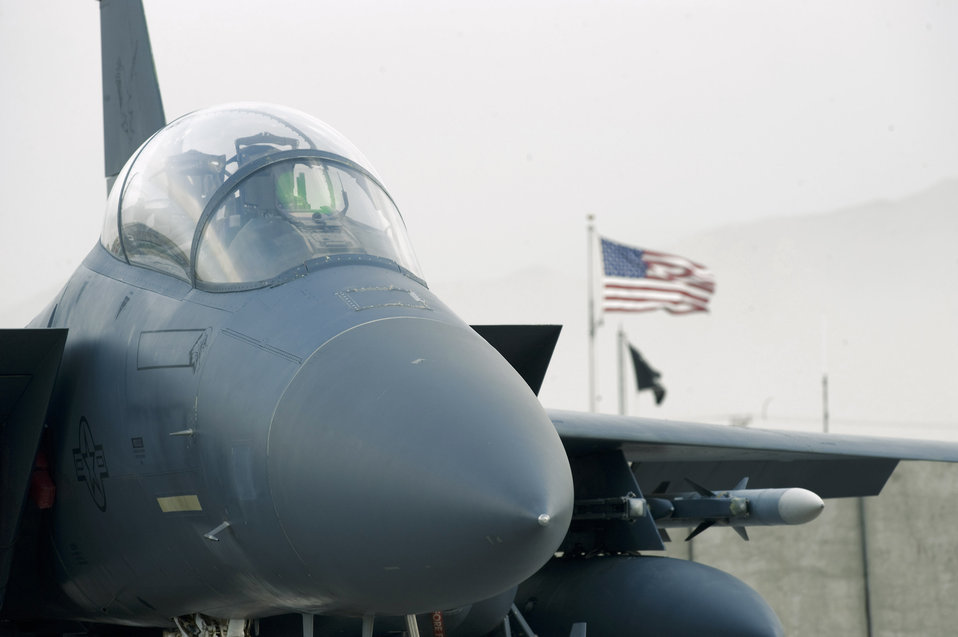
Top cover: Airpower integral to ground force's success

An F-15E Strike Eagle sits on the flightline after returning from a mission Sept. 15 at Bagram Airfield, Afghanistan. The F-15E is a dual-role fighter designed to perform air-to-air and air-to-ground missions.